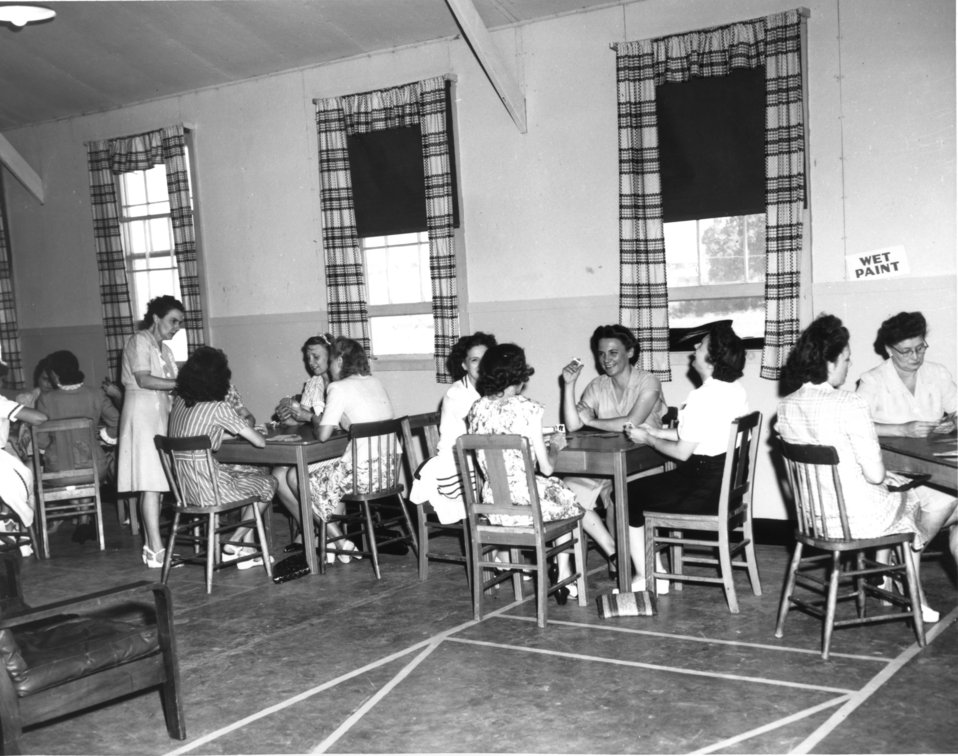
Recreation at Oak Ridge